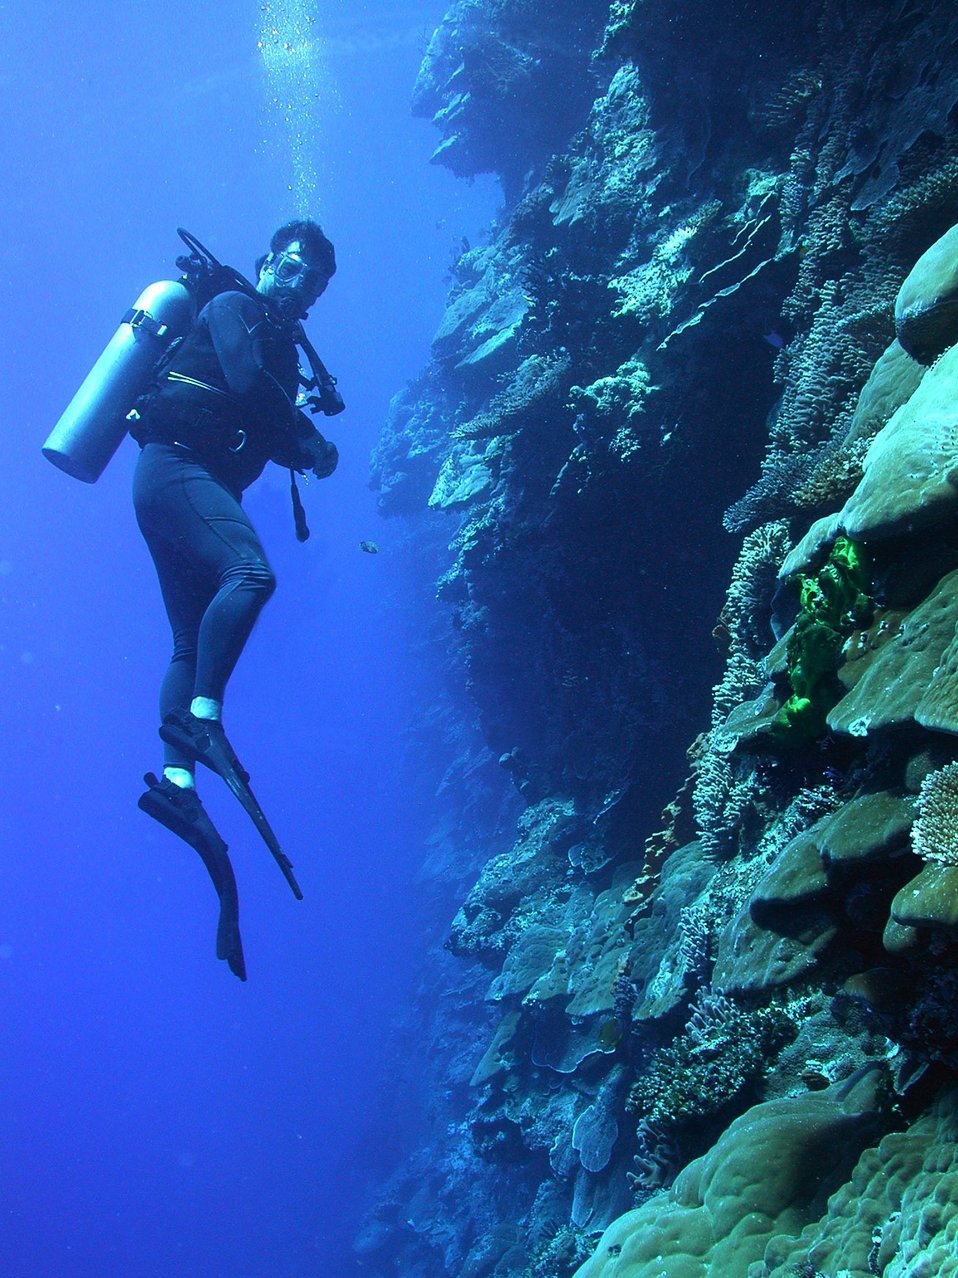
A diver explores the vertical distribution of corals on a Pacific wall.